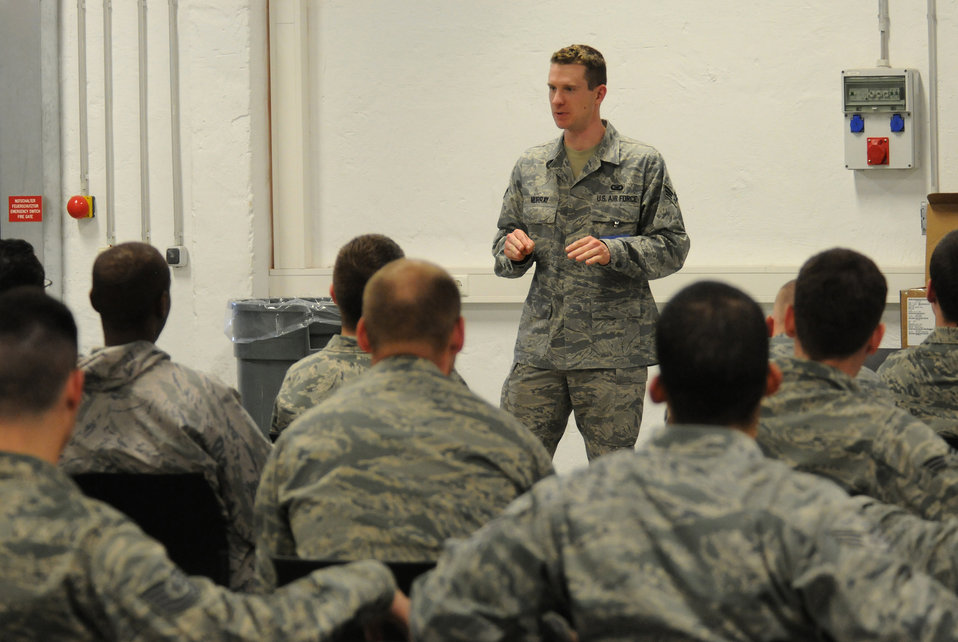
Operation Odyssey Dawn

SPANGDAHLEM AIR BASE, Germany ? Senior Airman Clayton Murray, 52nd Fighter Wing Public Affairs, briefs Airmen here before they deploy in support of Operation Odyssey Dawn March 20. Joint Task Force Odyssey Dawn is the U.S. Africa Command task force established to provide operational and tactical command and control of U.S. military forces supporting the international response to the unrest in Libya and enforcement of United Nations Security Council Resolution (UNSCR) 1973. UNSCR 1973 authorizes all necessary measures to protect civilians in Libya under threat of attack by Qadhafi regime forces. JTF Odyssey Dawn is commanded by U.S. Navy Admiral Samuel J. Locklear, III.